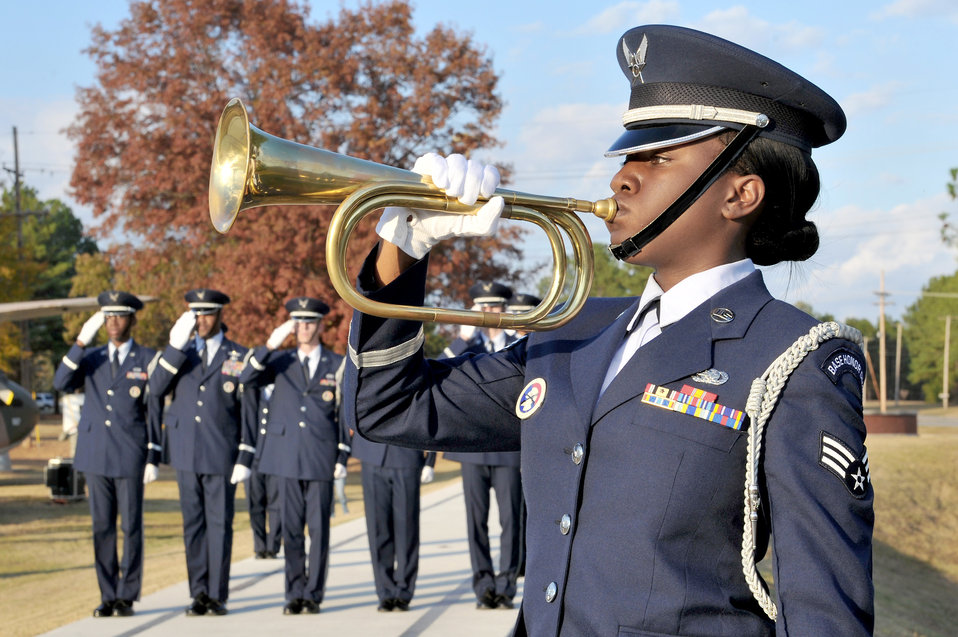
Veterans Day retreat ceremony

Senior Airman Massah Karmo plays Taps during the Veterans Days retreat ceremony Nov. 10, 2010, at Little Rock Air Force Base, Ark. The retreat ceremony served a two-fold purpose, signifying both the end of the official duty day, and providing an opportunity to pay respect to the nation's veterans. Airman Karmo is assigned to the 19th Logistics Readiness Squadron.